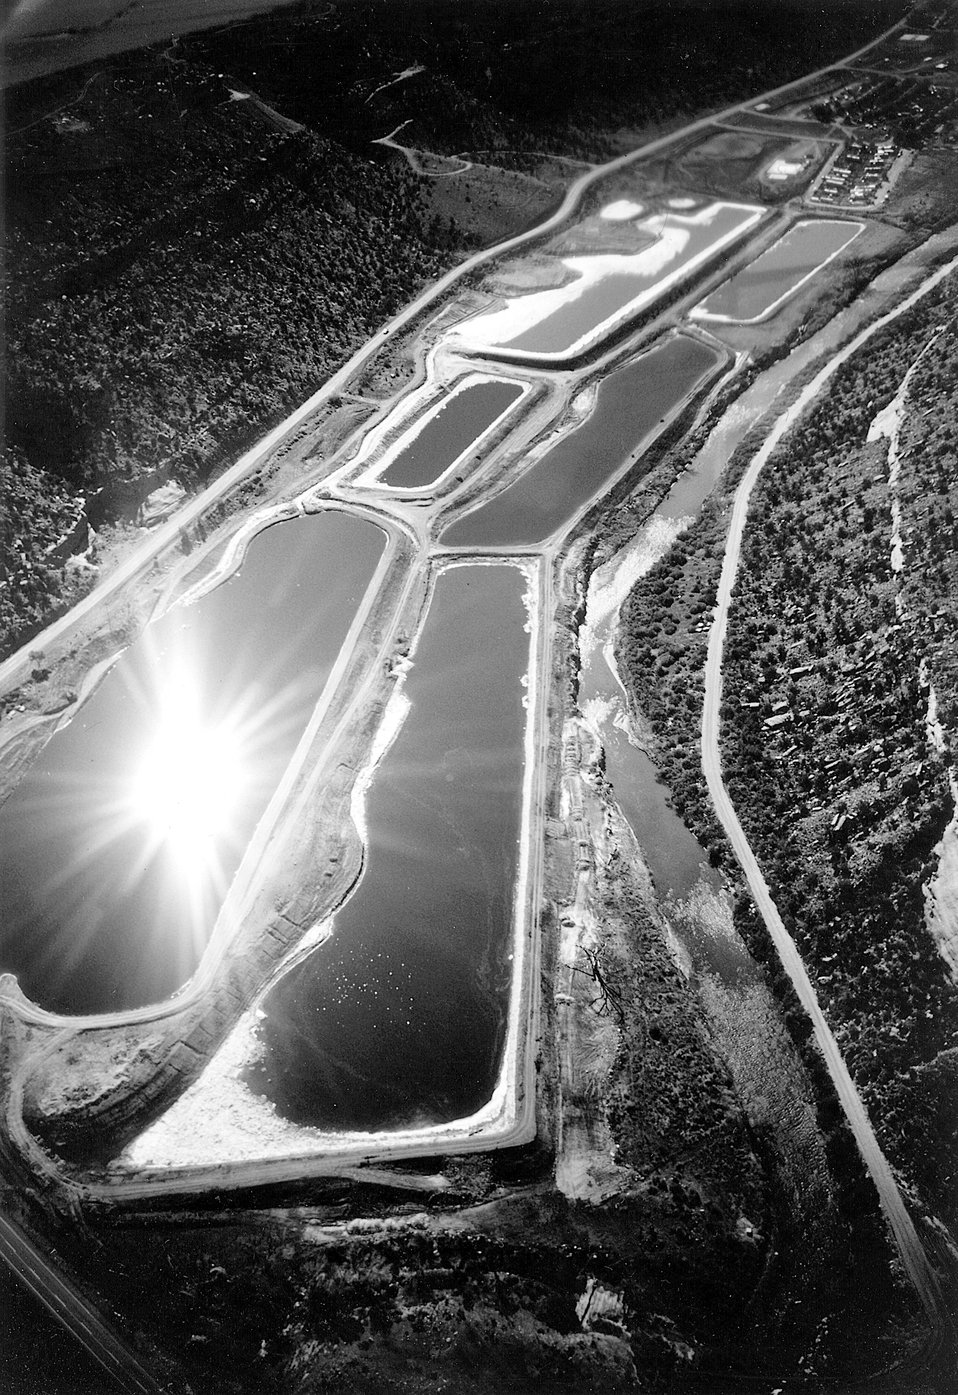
Holding pond at uranium processing mill. c. undated